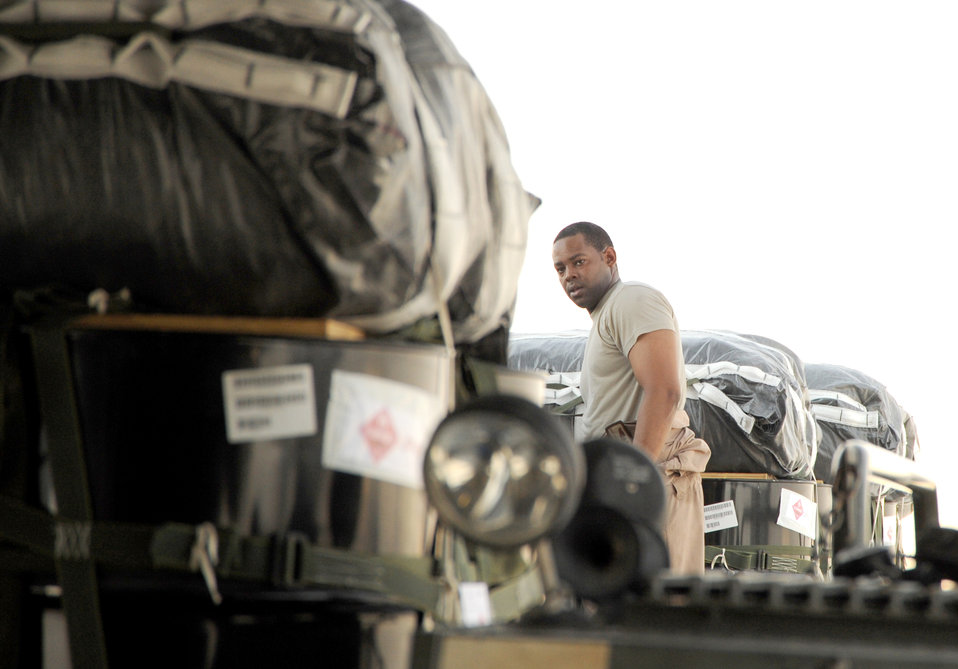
Operation Everest

Staff Sgt. Hardia Madden loads bundles of JP-8 fuel onto a C-17 Globemaster III before an airdrop mission Aug. 13, 2010, at an air base in Southwest Asia. Sergeant Madden is a loadmaster with the 816th Expeditionary Airlift Squadron.